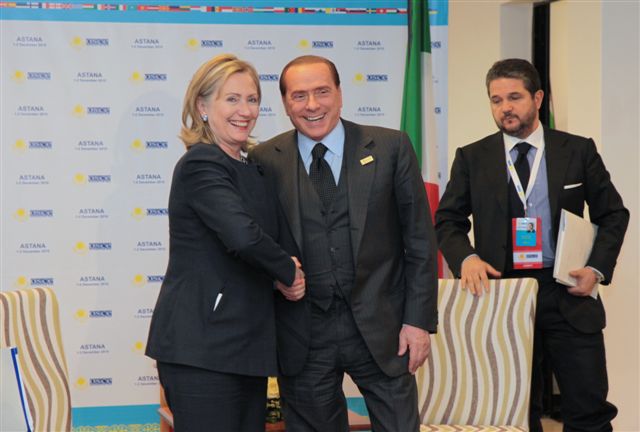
Secretary Clinton Shakes Hands With Italian Prime Minister Berlusconi

U.S. Secretary of State Hillary Rodham Clinton shakes hands with Italian Prime Minister Silvio Berlusconi after their bilateral meeting at the OSCE Summit in Astana, Kazakhstan, on December 1, 2010.